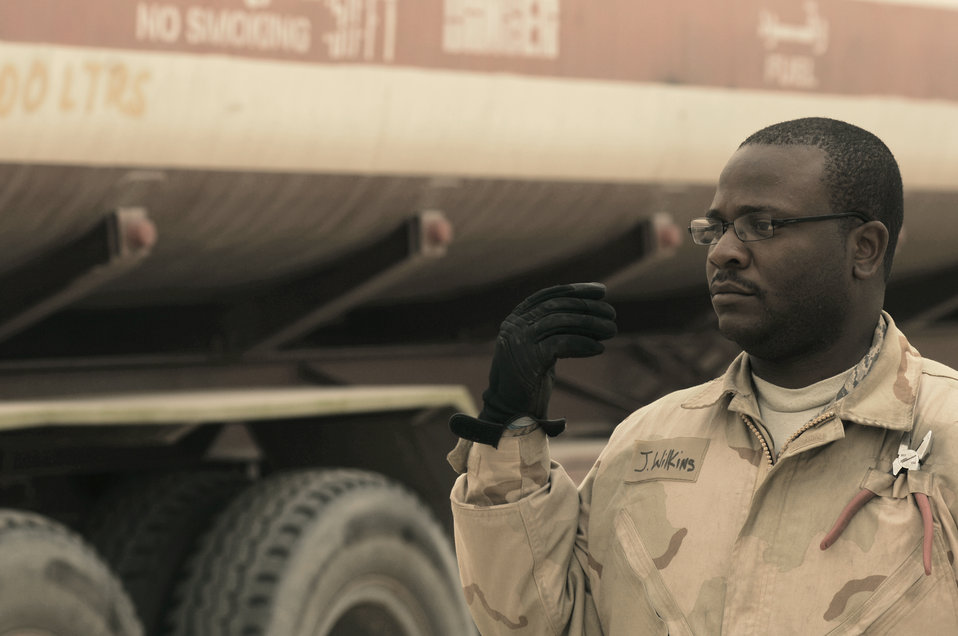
Fueled to fight

Staff Sgt. Jerome Wilkins motions forward another fuel truck to have its fuel downloaded into a bladder storage unit Feb. 26 in Southwest Asia. The fuels management flight is responsible for inventorying the fuel daily, and the transfer and issue of fuel to both vehicle operators and aircrews in support of operations Enduring Freedom and Iraqi Freedom. Sergeant Wilkins is a fuels technician from the 386th Expeditionary Logistics Readiness Squadron.